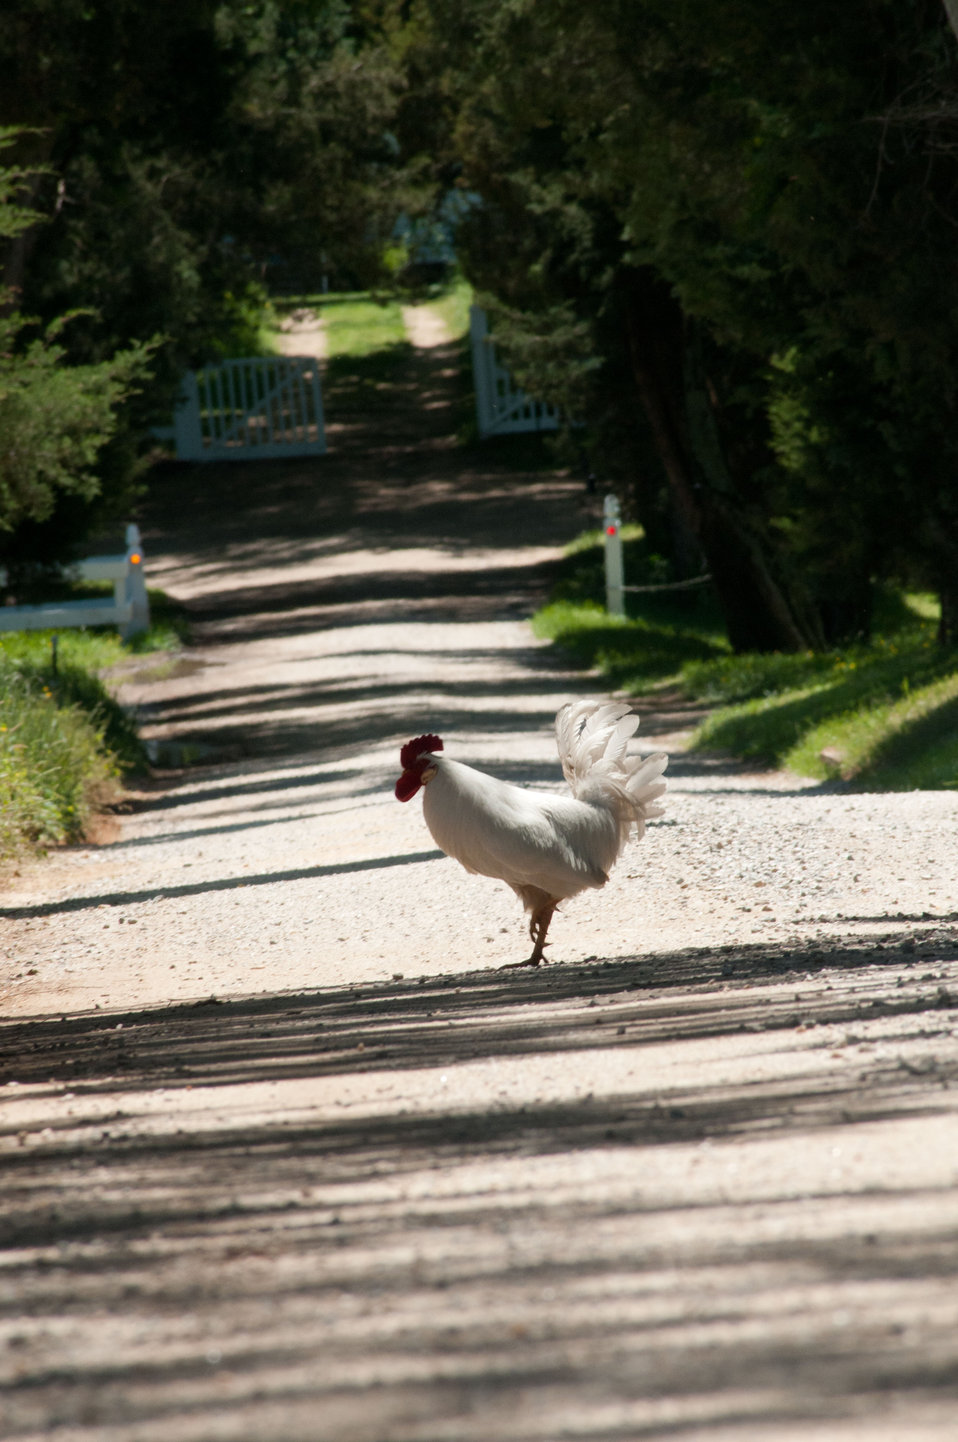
Why this rooster crossed the road is still unanswered, because they can freely walkabout the lawns and pastures at the Tuckahoe Plantation, in Goochland County, VA, on Thursday, May 5, 2011. Where chickens graze on the grass they also leave nutrient rich manure to revitalize the soil, enhancing regrowth. The plantation was the boyhood home of President Thomas Jefferson from 1745 until 1752. Today the plantation is a working farm with cattle, sheep, chickens and rabbits supplying meats to Fall Line Farms a local food hub. Fall Line Farms offers a wide variety of household food staples and specialty items on an ever changing inventory of fruits, vegetables, meats, soaps, eggs, cheeses, flowers, honey, pastas, sauces, syrups, baked goods, mushrooms, flour and grains. Suppliers post what they have on a Lulus Local Food online listing and customers make their selection. Every Thursday, suppliers team up to deliver customized orders to, one of several pick-up points, designated by the customer in or around the Richmond, VA area.